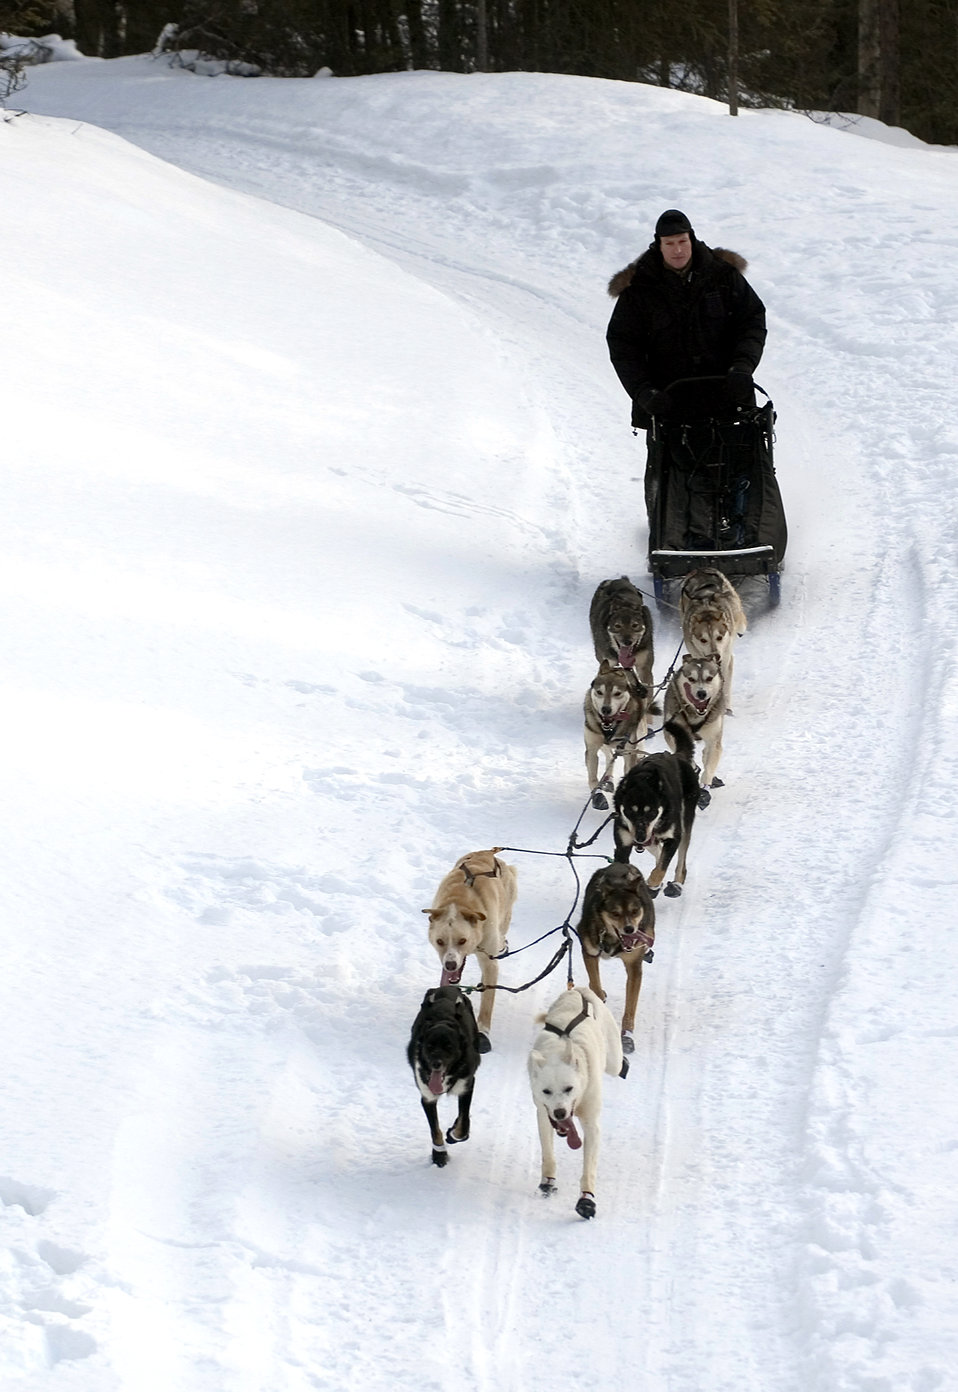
Major racer

ANCHORAGE, ALASKA -- Maj. Tom Knolmayer leads his team of Iditarod sled dogs on a training run Feb. 27 in preparation for 'The Last Great Race'. Major Knolmaye is chief of surgery at Elmendorf Air Force Base, Alaska, and his dog team competed in the Iditarod which began March 4. Major Knolmayer is the only active-duty military member competing in the race out of 79 contestants this year. You can follow Major Knolmayer's (#24) progress at www.iditarod.com.